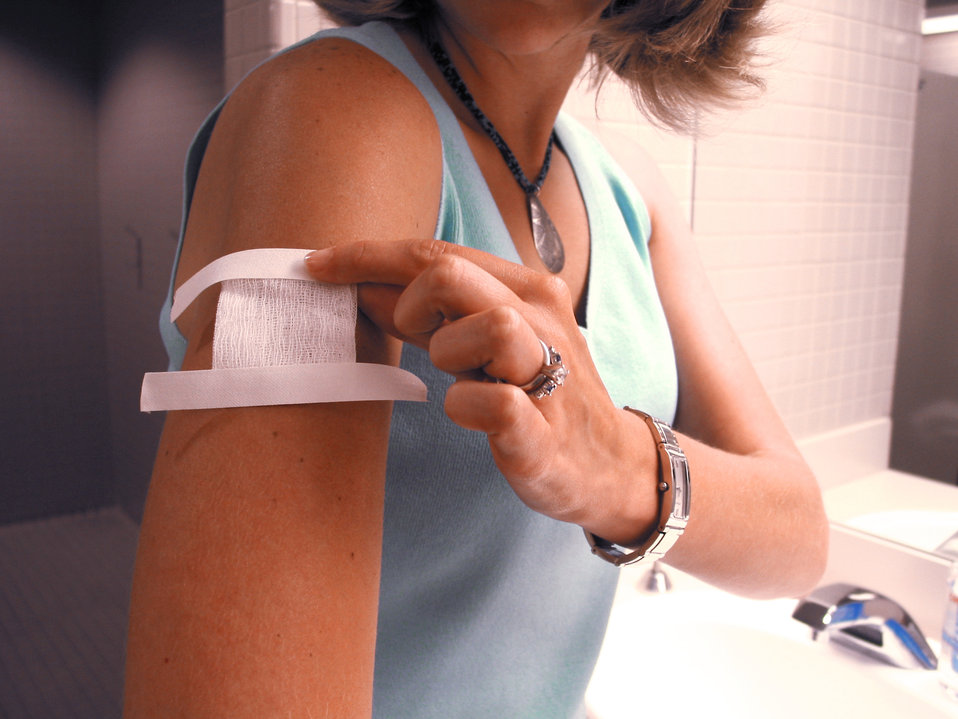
Bandaged arm from vaccination

This image demonstrates how a smallpox vaccinee covers the vaccination site with a gauze and medical tape bandage.